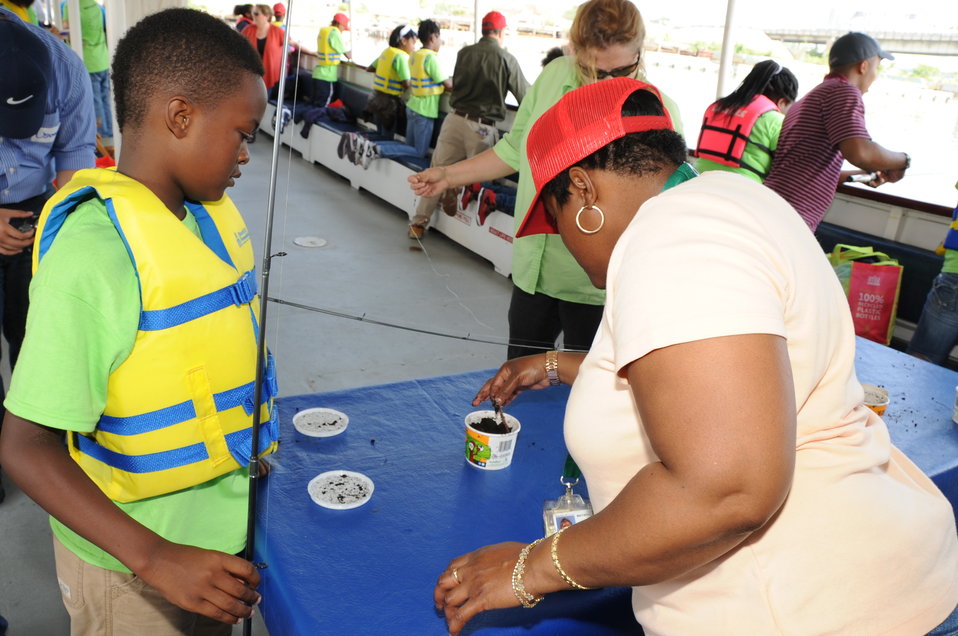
2013 National Fishing and Boating Week

Local students prepare to enjoy fishing at the annual kick-off of National Fishing and Boating Week on the Anacostia River in Washington D.C.